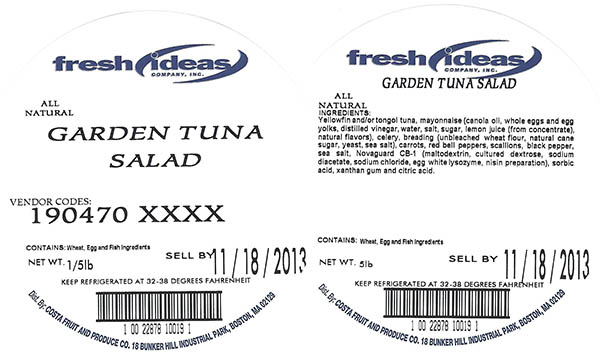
RECALLED – Prepared salads

October 24, 2013 – Product Recall – Boston Salads and Prepared Foods Recalling Ready-To-Eat Products Because of Possible Health Risk.